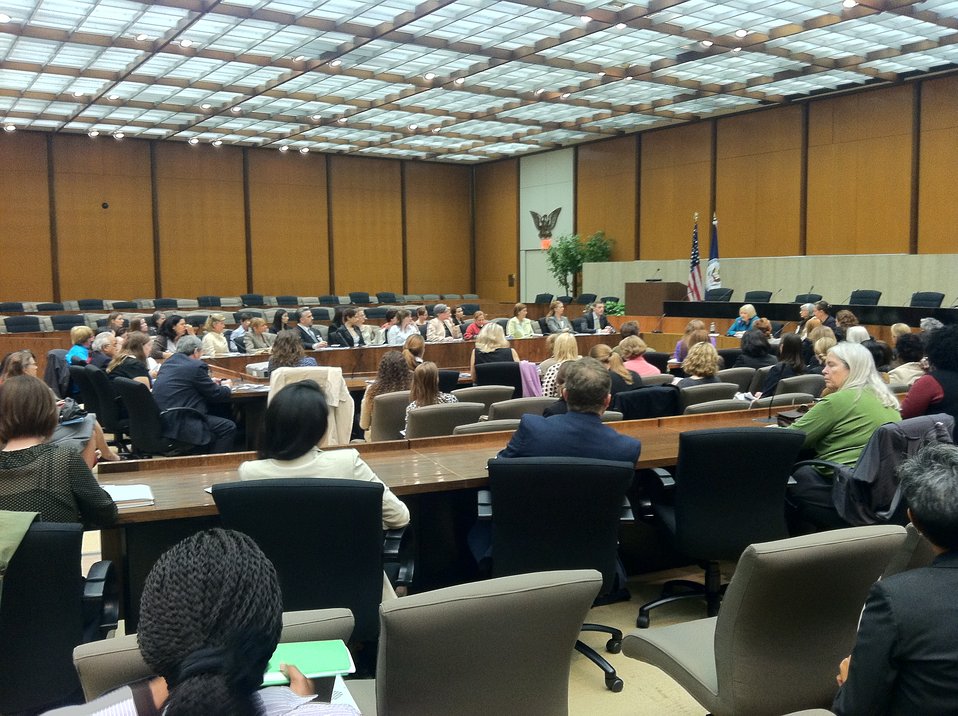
Ambassador Verveer Hosts a Civil Society Forum

Ambassador-at-Large for Global Women’s Issues Melanne Verveer hosts a civil society forum on the U.S. Department of State Policy Guidance on Promoting Gender Equality to Achieve Our National Security and Foreign Policy Objectives, at the Department of State in Washington, D.C., on April 9, 2012.